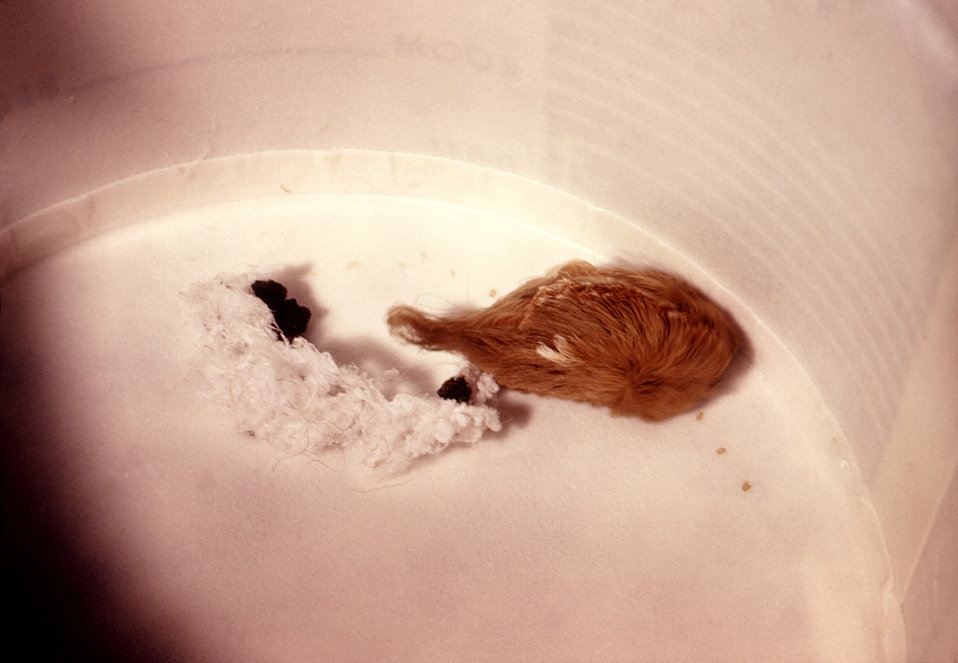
This is a puss caterpillar, Megalopyge opercularis, which is an urticating, or hive-producing caterpillar.